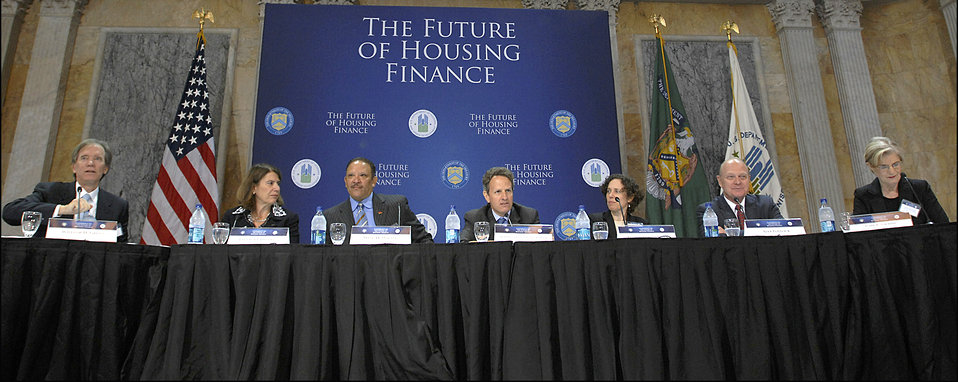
Conference on the Future of Housing Finance, 08/17/2010

Secretary Geithner moderated the second panel at the Conference on the Future of Housing Reform.